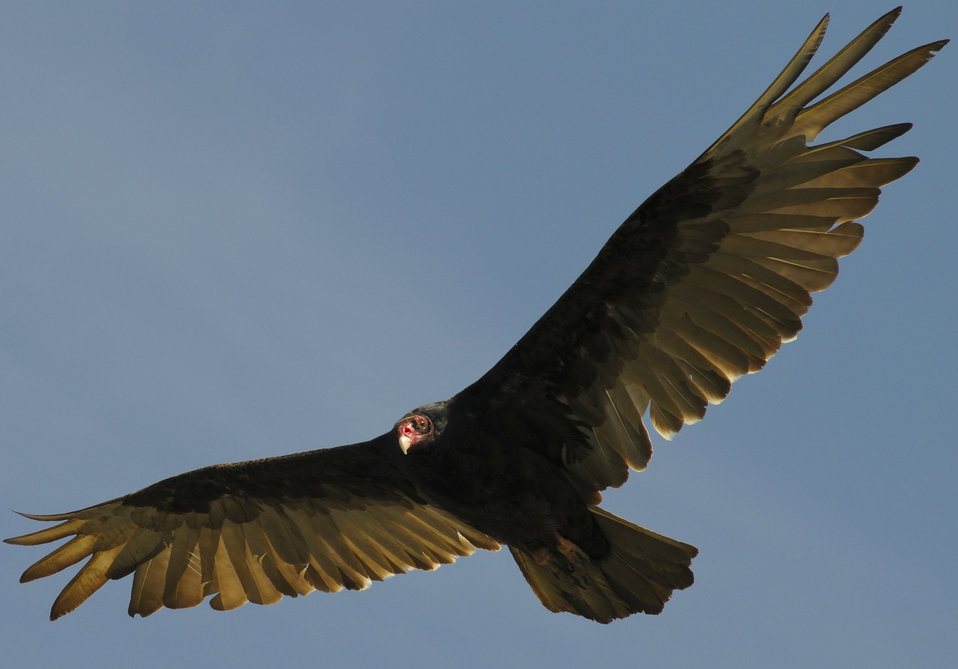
Turkey Vulture

Turkey Vultures can be found on all of the National Wildlife Refuges along the Oregon coast where they feed on dead marine mammals, seabirds and other carrion.